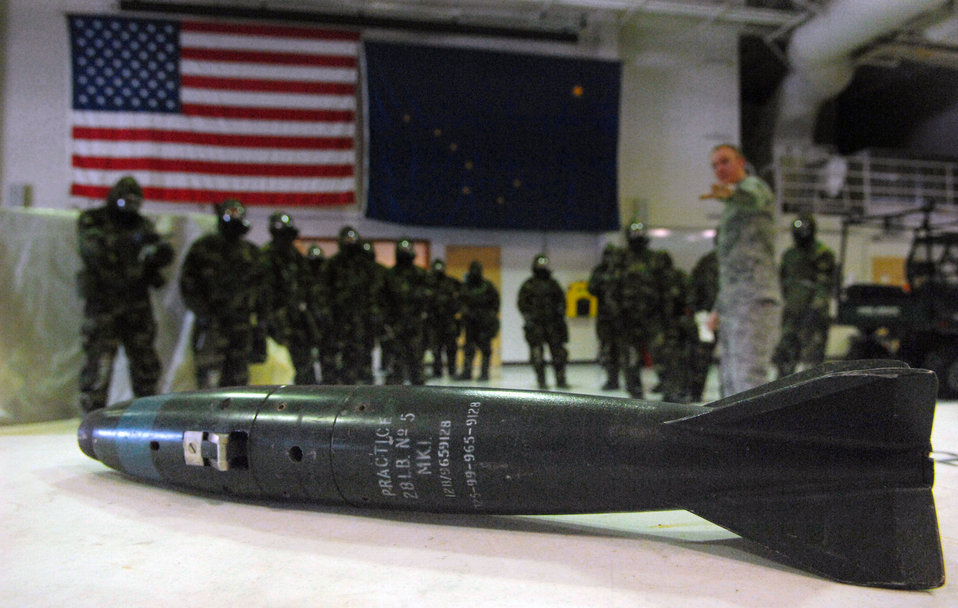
Training that matters

Senior Airman John Buckley reviews different types of explosive ordnance during a chemical warfare training class Apr. 7 at Eielson Air Force Base, Alaska. Airman Buckley is a chemical, biological, radiological, nuclear and high-yield explosives training instructor and responder assigned to the 354th Civil Engineering Squadron.